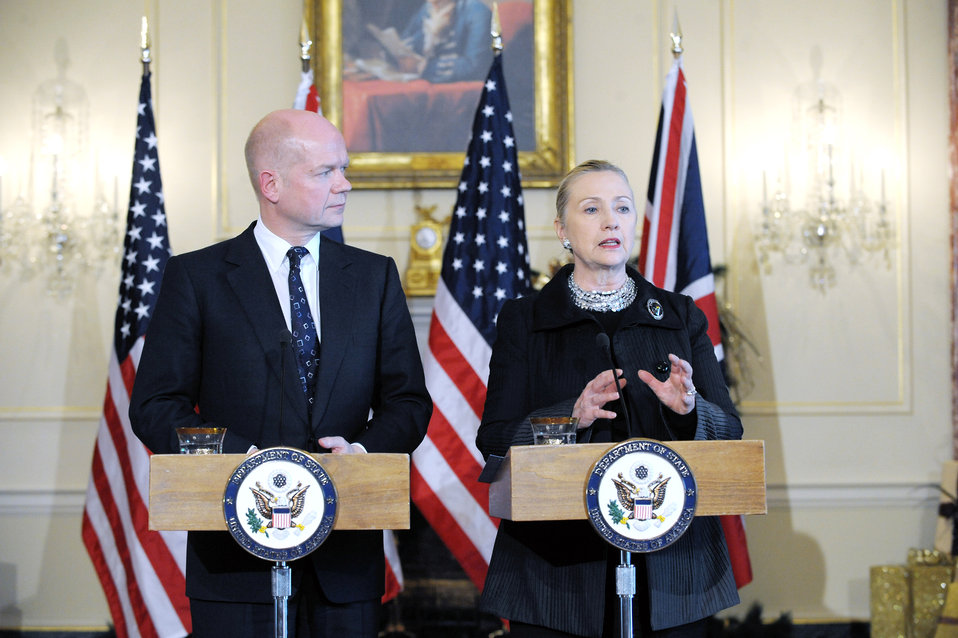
Secretary Clinton and UK Foreign Secretary Hague Hold a Press Conference

U.S. Secretary of State Hillary Rodham Clinton and UK Foreign Secretary William Hague hold a joint press conference after their bilateral meeting, at the U.S. Department of State in Washington, D.C., on December 12, 2011.